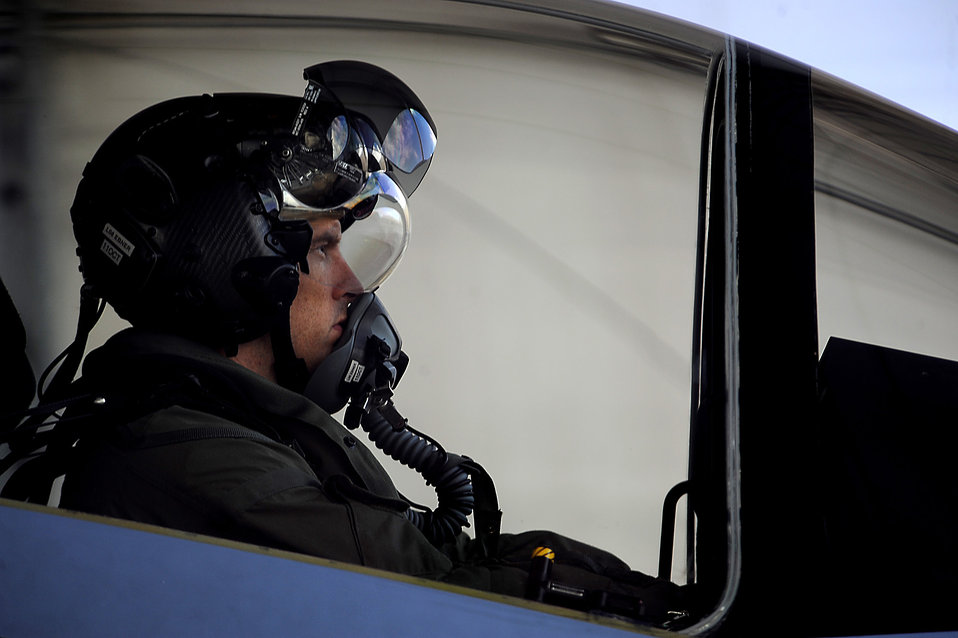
F-35A Lightning II joint strike fighter pilot Lt. Col. Mike Ebner, from the 33rd Fighter Wing at Eglin Air Force Base, Fla., preflights his jet before flying a local training mission over the Emerald Coast Sept. 18, 2012.